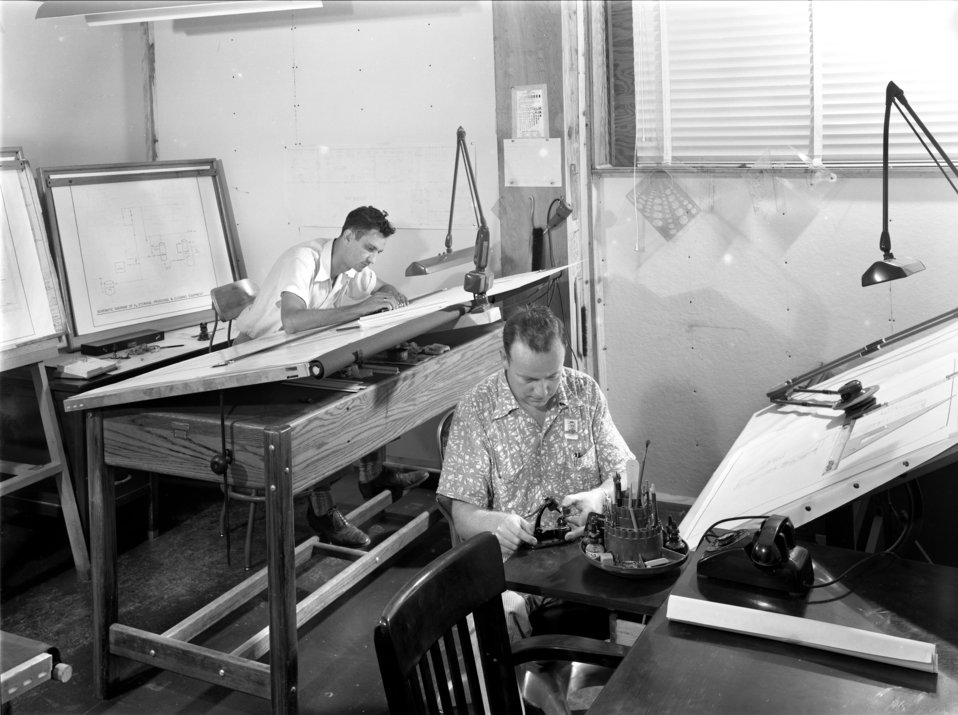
Carbide Training School Drafting Department 1951 Kentucky

7116-1 DOE photo Ed Westcott 8-15-1951 Kentucky